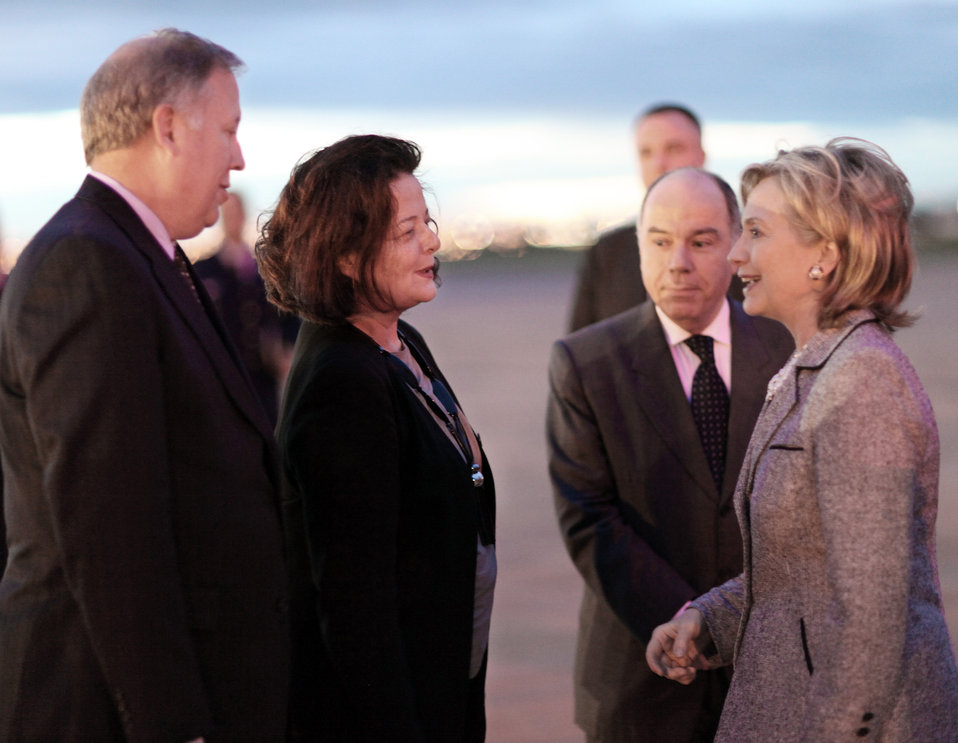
Secretary Clinton Greets Ambassador Vera Machado

U.S. Secretary of State Hillary Rodham Clinton speaks with Brazil's Ambassador to the U.S. Vera Machado, Mauro Vieira ,and the U.S. Ambassador to Brazil Thomas Shannon in Brasilia, Brazil March 2, 2010.